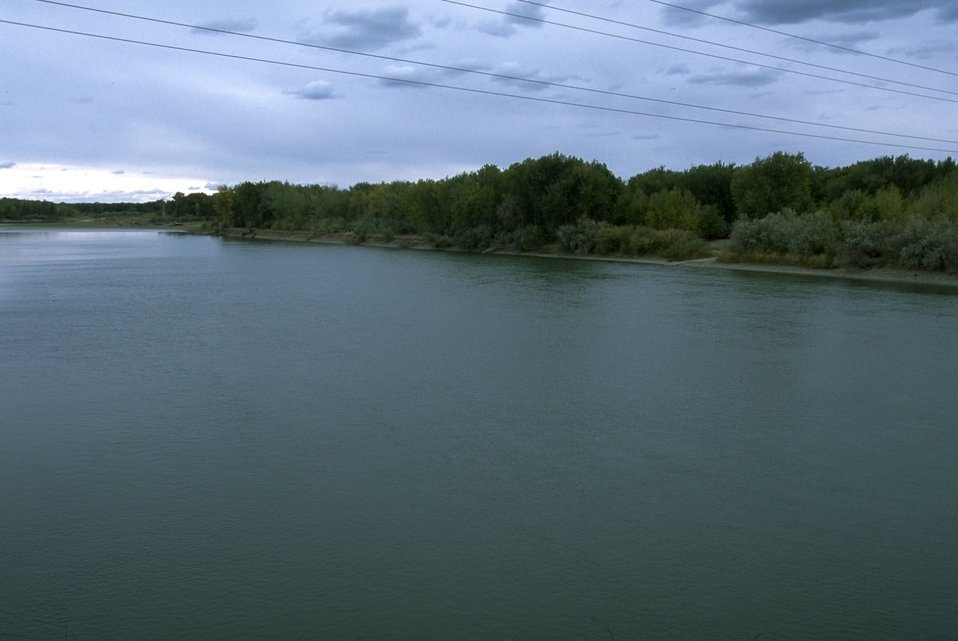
Howrey Island Recreation Area viewed from the Yellowstone River